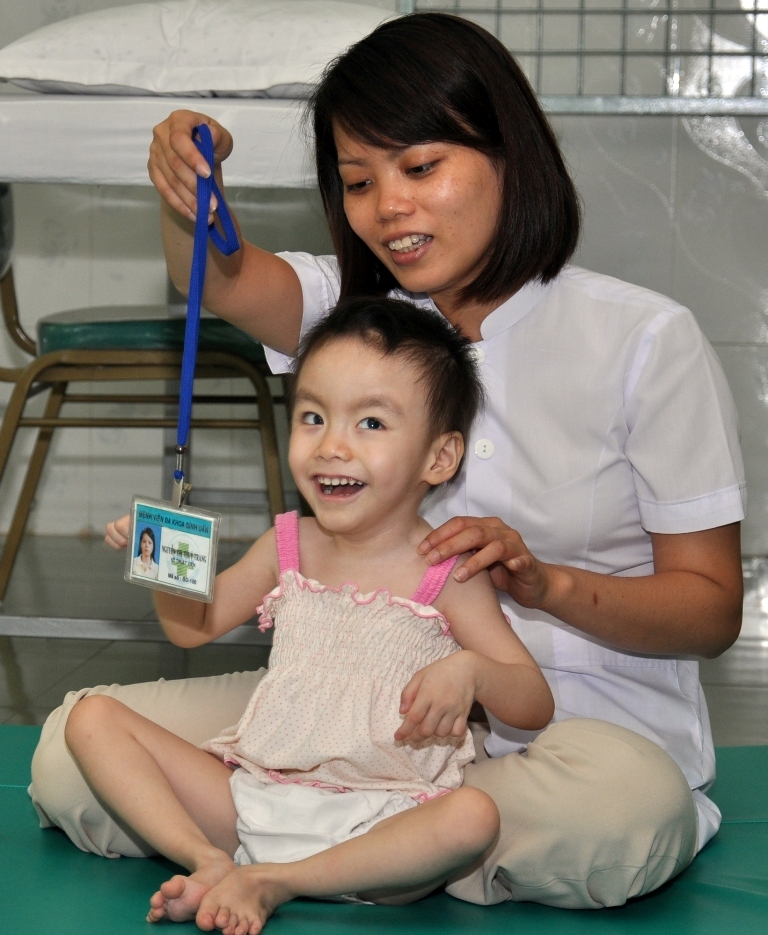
USAID assists persons with disabilities in Vietnam

A young girl receives care and treatment at a USAID-supported rehabilitatilon center in Danang.